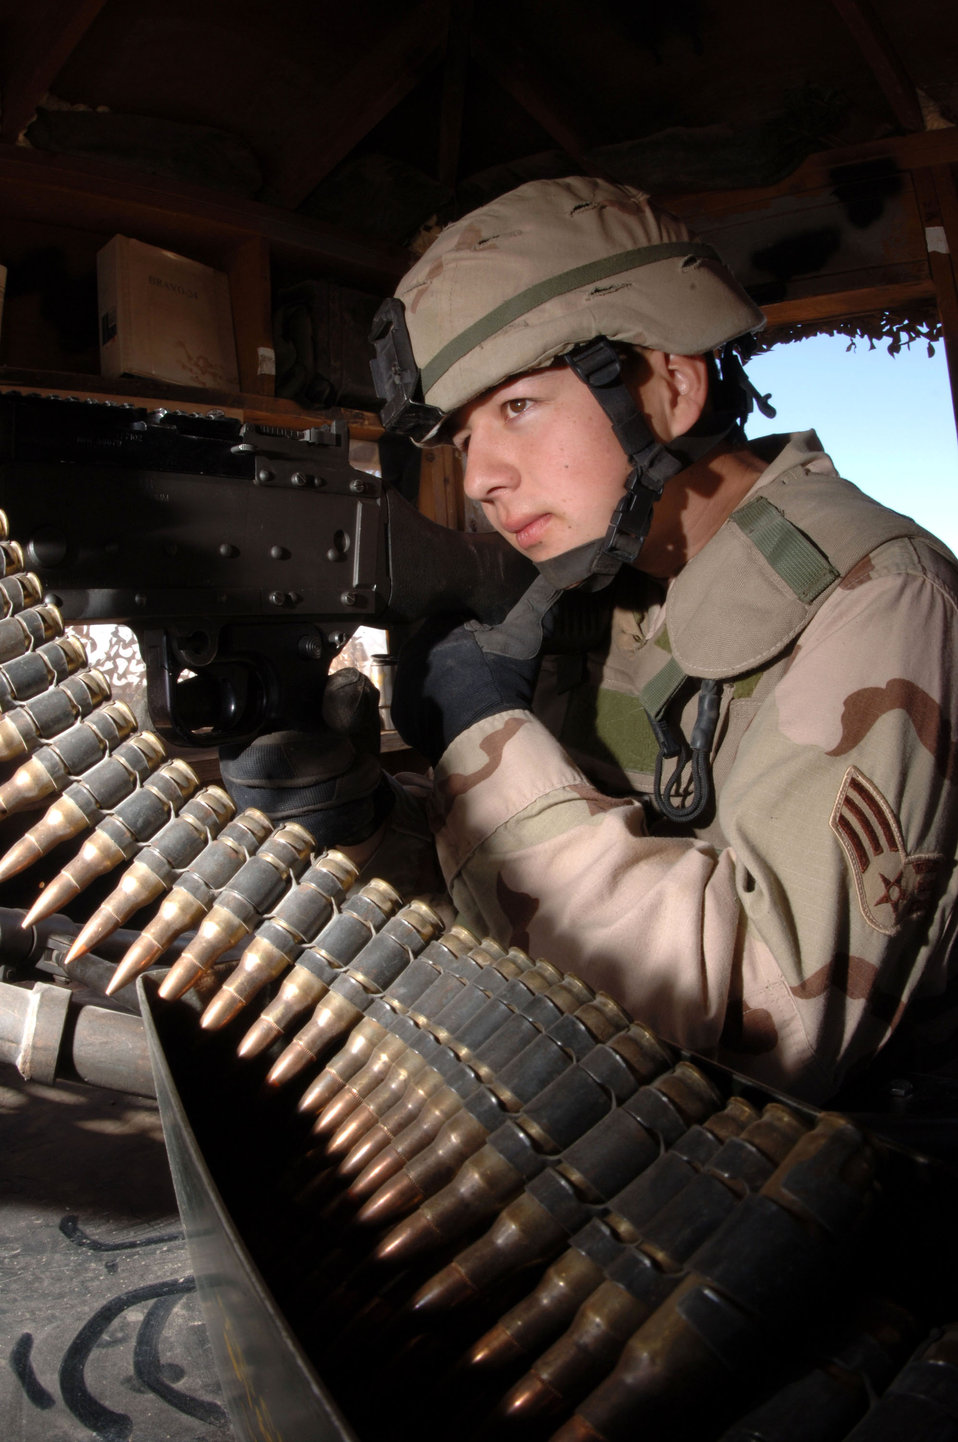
Guarding the perimeter

Senior Airman Richard Rodriguez aims a machine gun toward an entry control point Jan. 24 at Kirkuk Regional Air Base, Iraq. Airman Rodriguez is a 506th Expeditionary Security Forces Squadron perimeter guard who is deployed from the 5th SFS at Minot Air Force Base, N.D.